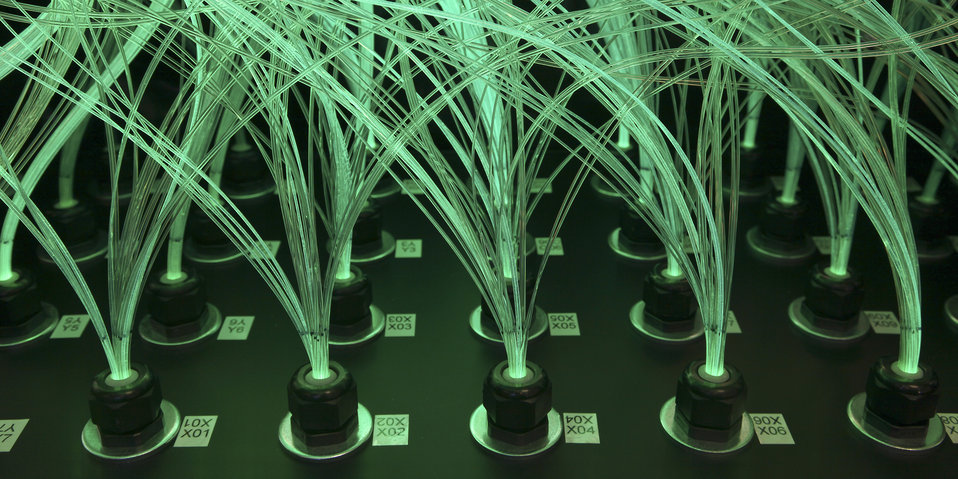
SHOWN ARE THE OPTICAL FIBERS OF A VULCAN DETECTOR MODULE AT OAK RIDGE NATIONAL LABORATORY.

The fibers transmit the light signals created by captured neutrons to photo multiplier tubes where the signals are amplified and then sent to a data acquisition system. VULCAN was built to take measurements on engineering materials under stress. It is capable of seeing inside the materials and making three dimensional maps of the distance between atoms in critical sections.